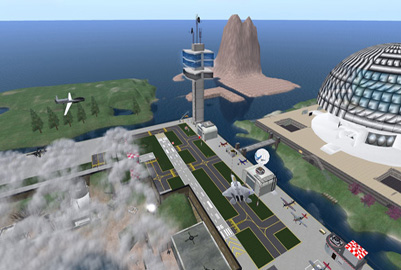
Air Force eyes new learning systems in 'Second Life'

A section of MyBase islands in Second Life. The Air Force created and maintains this virtual area.